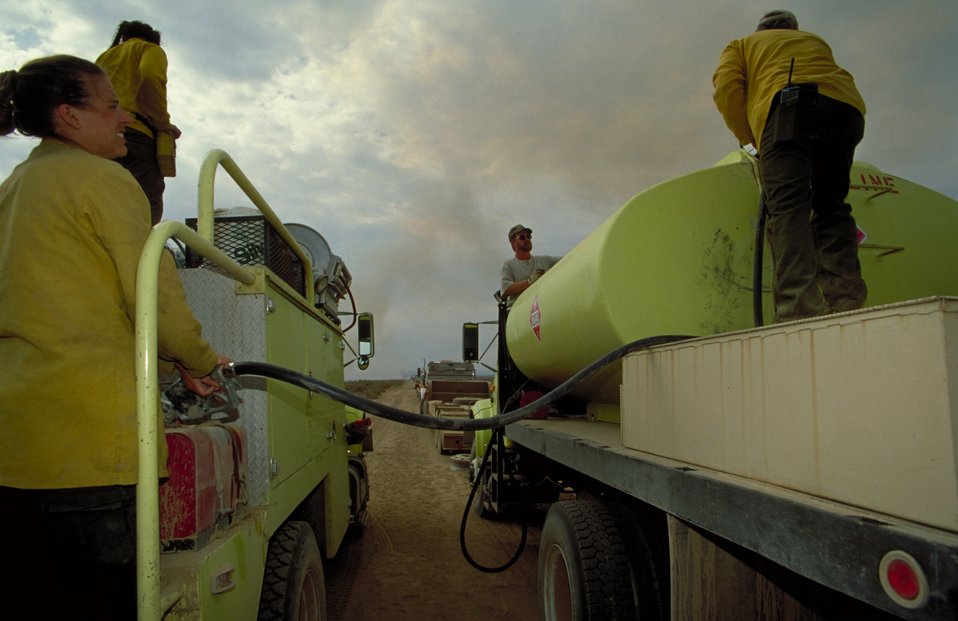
Fueling heavy engine Fire Season 2000 Lower Snake River District LSRD